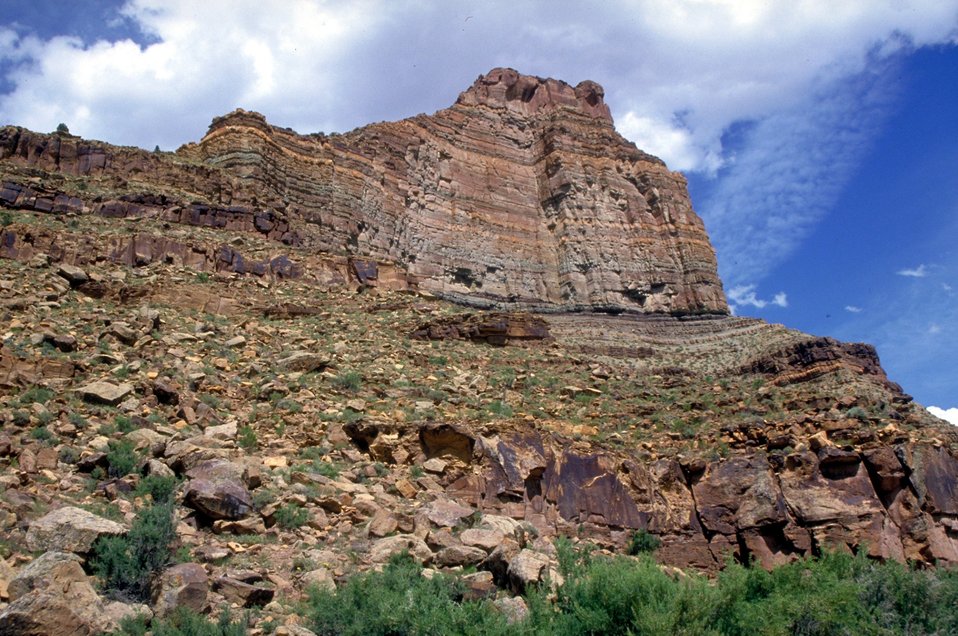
Nine-Mile Canyon near Price, Utah.